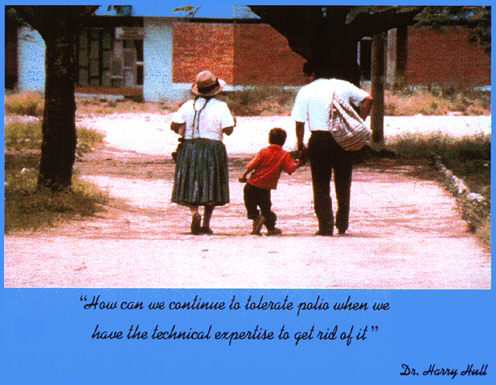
Child with sequelae of polio. Quote from Dr. Harry Hull.